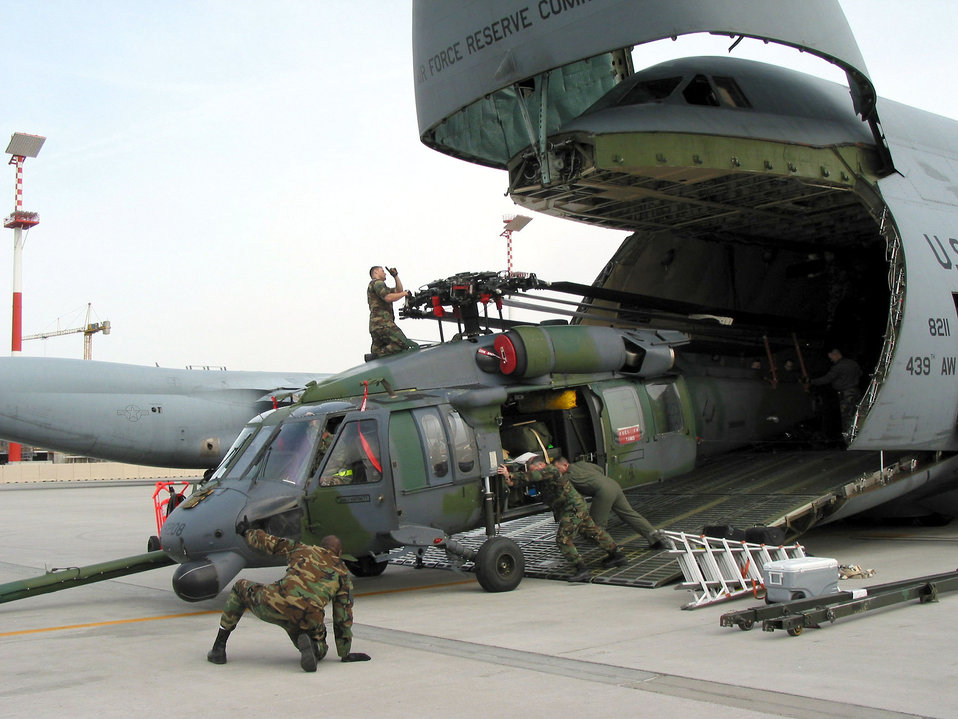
Chopper load

RAMSTEIN AIR BASE, Germany (AFPN) -- Master Sgt. Mark Dupree gives the thumbs up as an HH-60G Pave Hawk helicopter is unloaded from a C-5 Galaxy here March 18. Sergeant Dupree is the 86th Air Mobility Squadron mission support team chief. The helicopter is assigned to the 56th Rescue Squadron at Naval Air Station Keflavik, Iceland. The unit is here to train with the 86th Contingency Response Group on combined search and rescue operations.